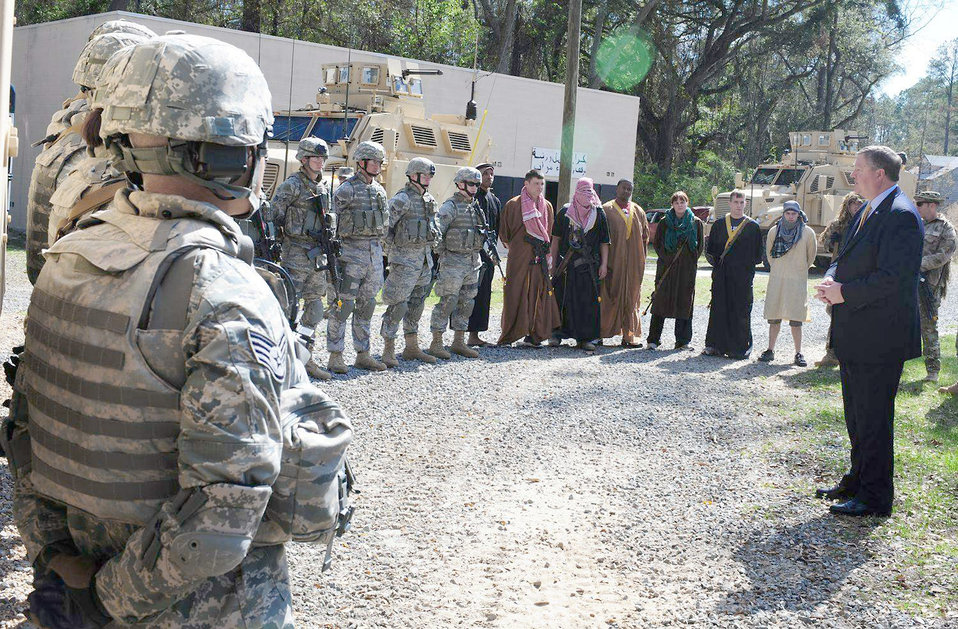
SecAF at Moody

Secretary of the Air Force Michael Donley speaks to members of the 823rd Base Defense Squadron March 8, 2011, at Moody Air Force Base, Ga. Secretary Donley said he was impressed with the squadron's capabilities after receiving a demonstration of the base defense techniques used during deployments.